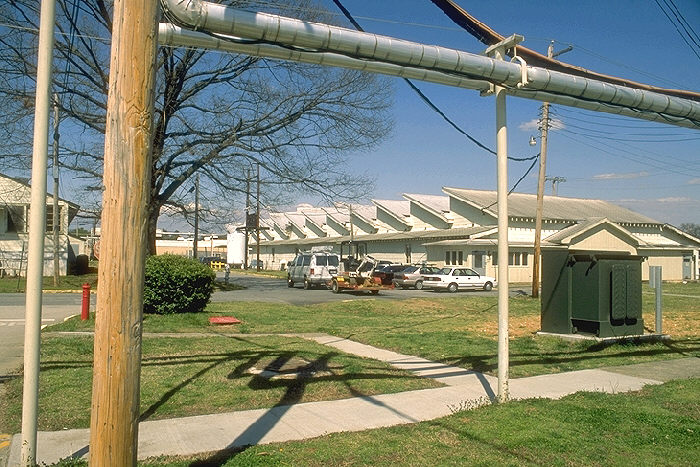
Chamblee Campus, CDC.